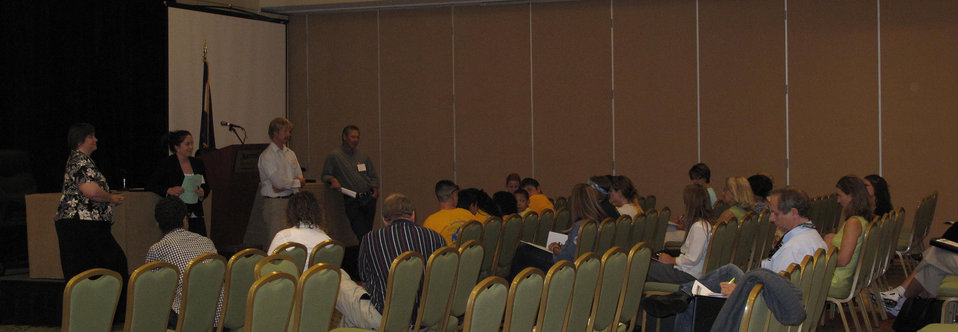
America's Outdoor Initiative Youth Conference